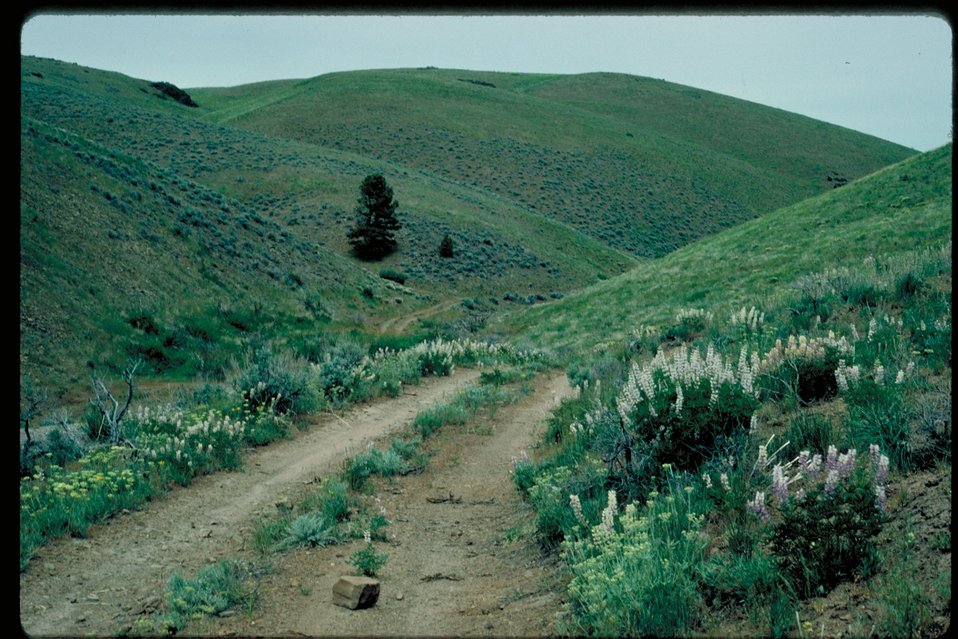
Goodales Cutoff Crown Creek Oregon Trail Lower Snake River District